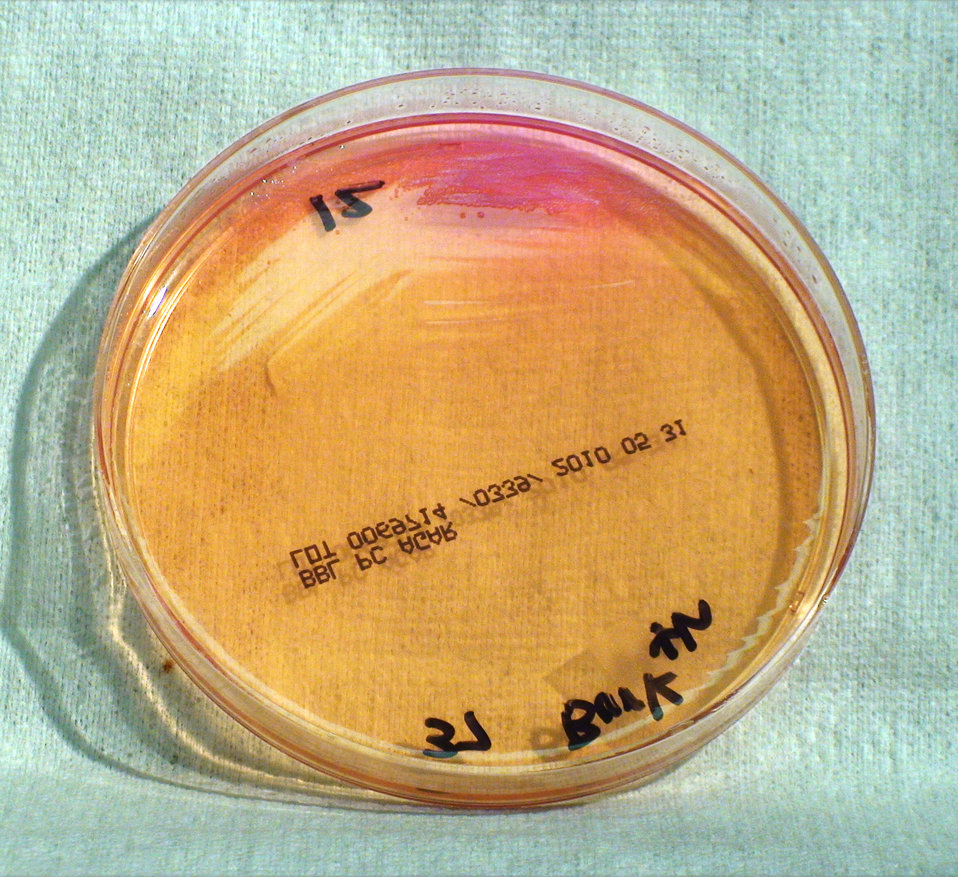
This photograph depicts the colonial morphology displayed by Gram-negative Burkholderia thailandensis bacteria, which was grown on a medium of Pseudomonas cepacia (PC) agar, for a 48 hour time period, at a temperature of 37�C. See PHIL 12416, for a view of this bacterial specie, grown on the same medium, for the same amount of time, however, at a greater temperature of 42�C, and PHIL 12421 and 12422 for the views of B. thailandensis colonies grown on PC agar, at the same temperature, but at only half the time. Finally, see both PHIL 12429 and 12430, which reveal colonial growth on PC agar, at a greater temperature (42�C), and for half the time (24hr), as well.